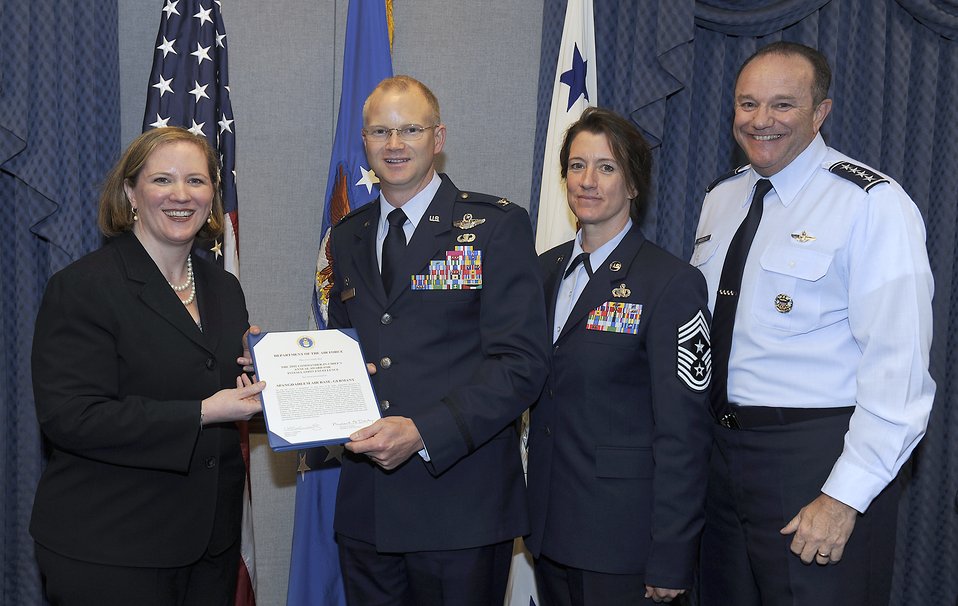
Installation Excellence Award

Undersecretary of the Air Force Erin Conaton presents the 2011 Commander in Chief's Installation Excellence Award to Col. Christopher Weggeman, the commander of the 52nd Fighter Wing at Spangdahlem Air Base, Germany, and Chief Master Sgt. Sandra Miller, 52nd FW command chief, as Air Force Vice Chief of Staff Gen. Philip Breedlove looks on. The award presentation took place May 3, 2011, during a ceremony in the Pentagon.